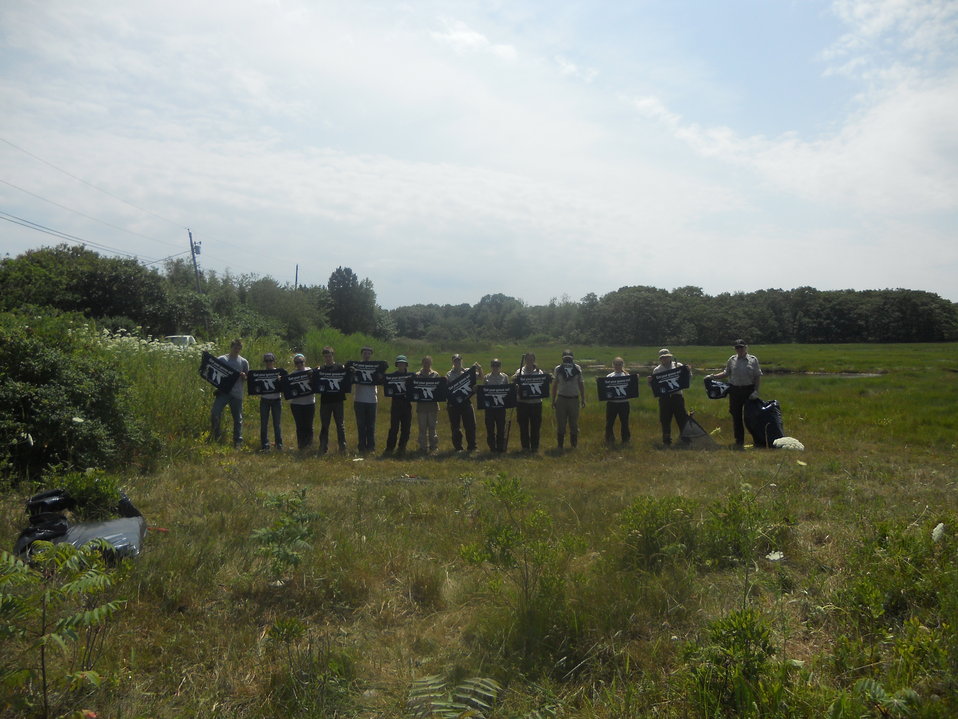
Get Your Goose On!

USFWS employees and Youth Conservation Corps members take a break from Phrag cutting to pose with their GYOG! towels.